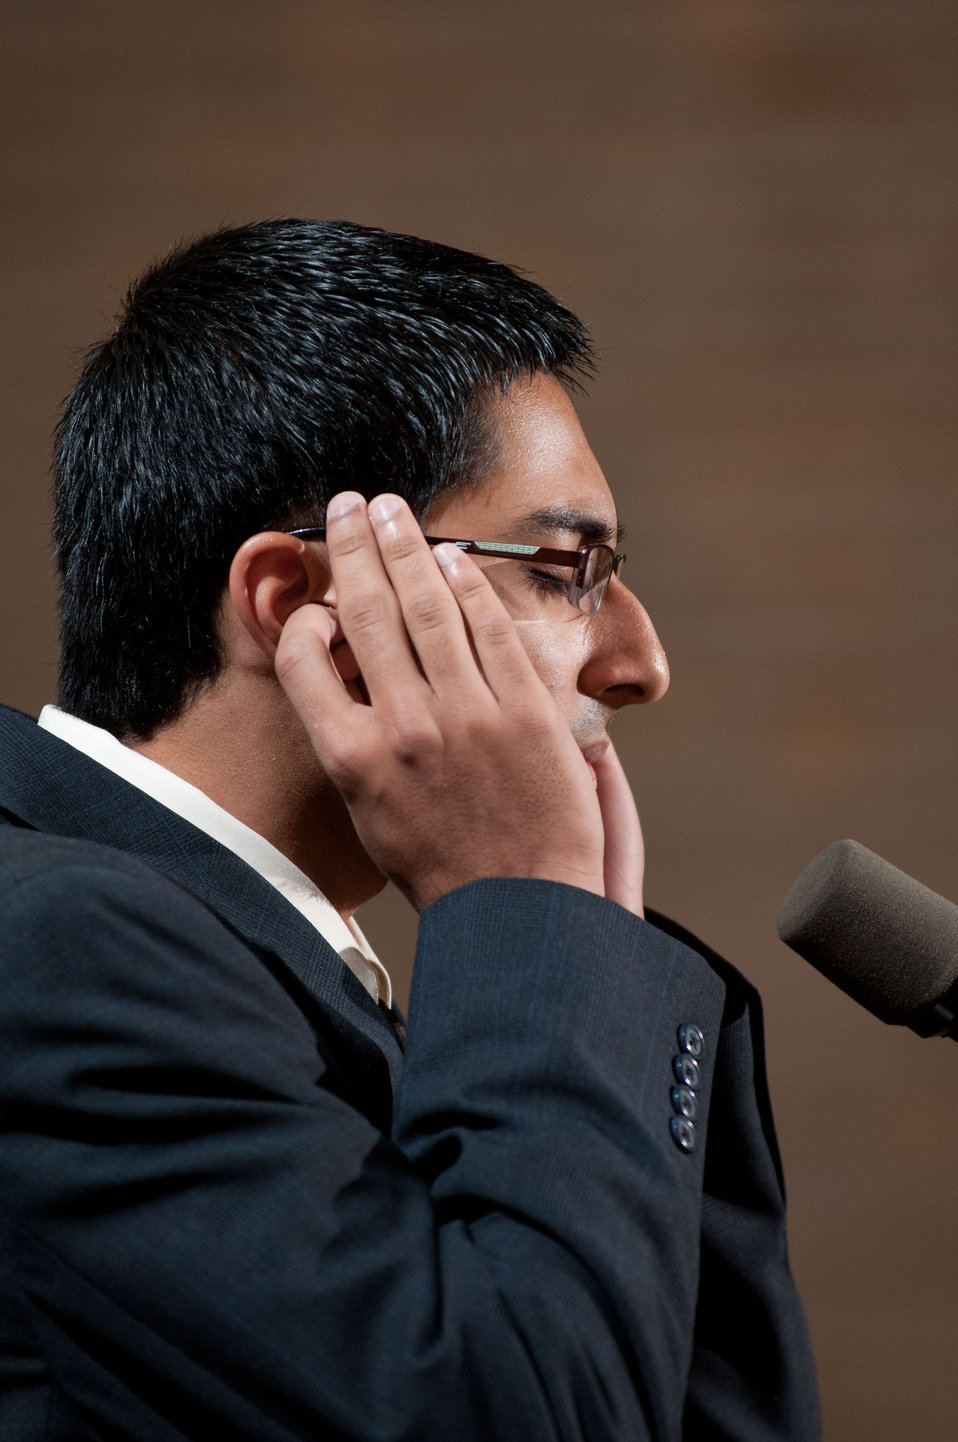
Aman Chhipa explained and performed the Adhaan, call to prayer, for the Iftar celebration, co-sponsored by the U.S. Department of Agriculture, U.S. Agency for International Development (USAID) and Islamic Relief USA, on Tuesday, August 7, 2012, in the USDA Whitten Building, in Washington, D.C. Ramadan is the month of fasting, intensive prayer, sacrifice and worship for Muslims around the world. Throughout this month, Muslims fast during the day, abstaining from consuming food from dawn to dusk and using this time to purify spiritually. Fasting reminds Muslims of the poverty and hunger suffered by many in the United States and worldwide. It is a connection with those who are hungry not through devotion, but through the many global factors that lead to hunger and famine. Iftar is the meal at which Muslims break their fast at sunset, usually by eating dates, according to the Prophetic tradition.